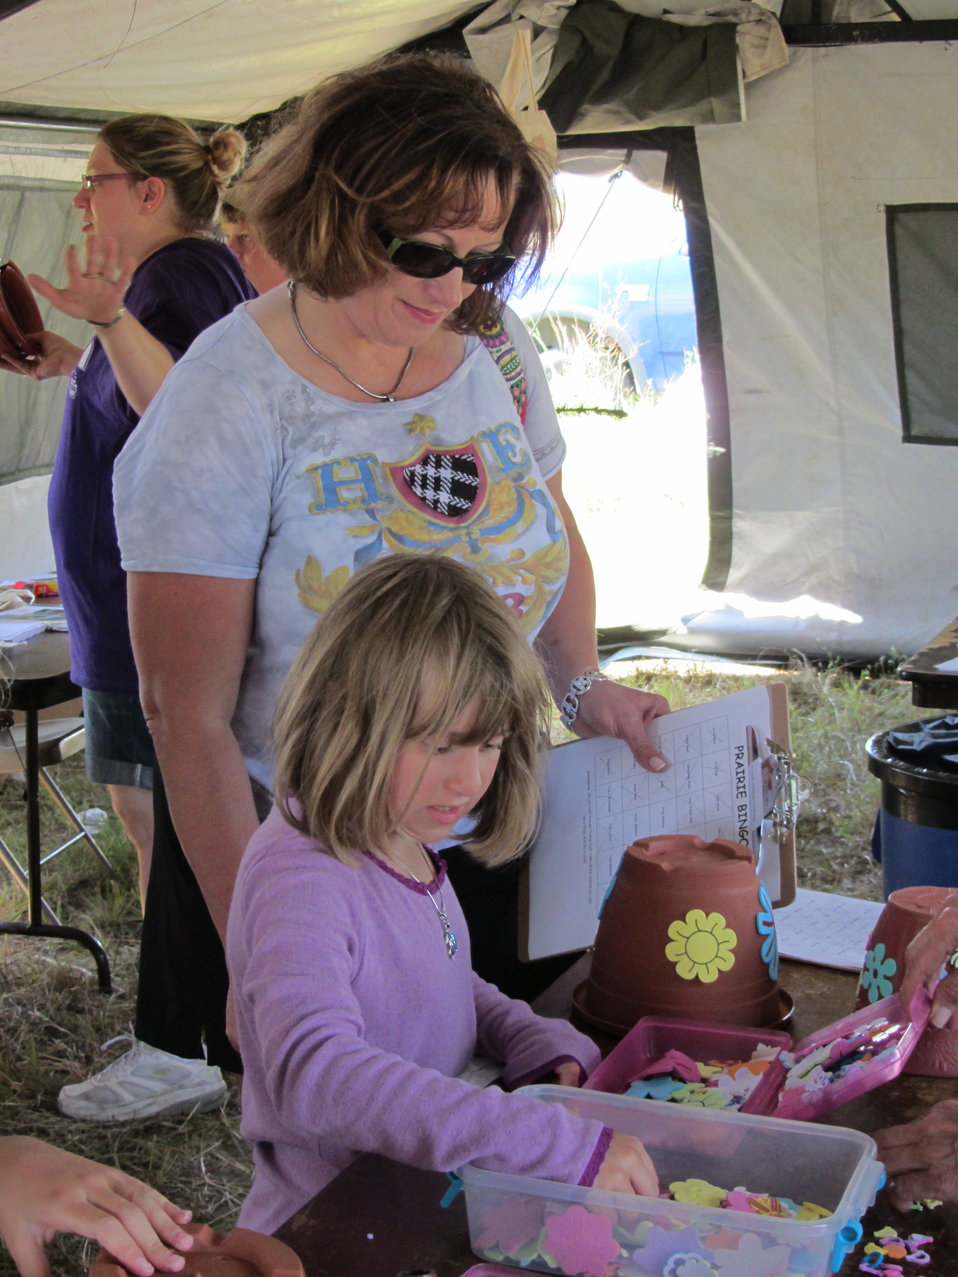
2011 Huron Prairie Fest